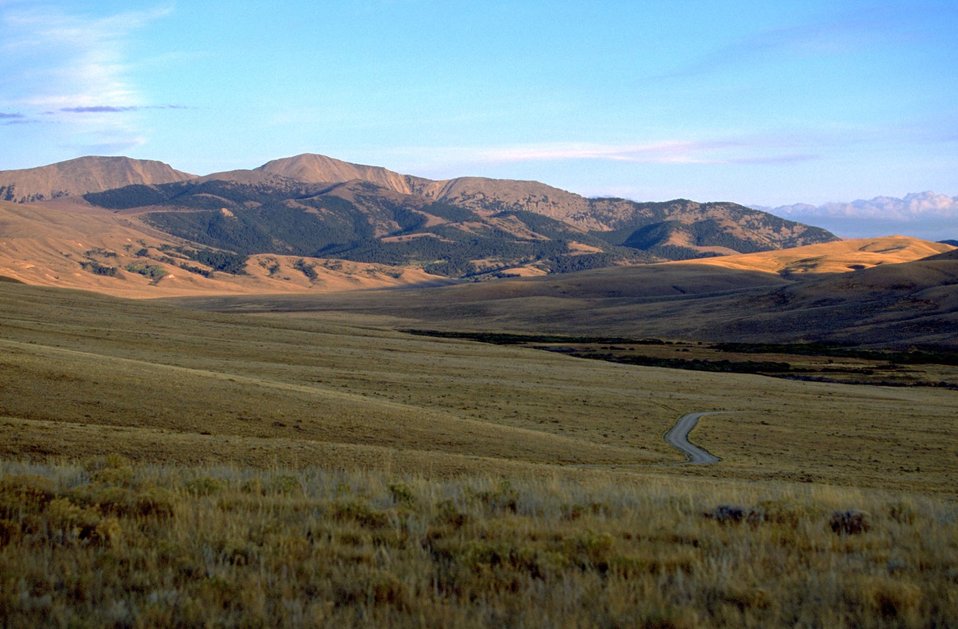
Grassy hills leading down to creek with mountains in background